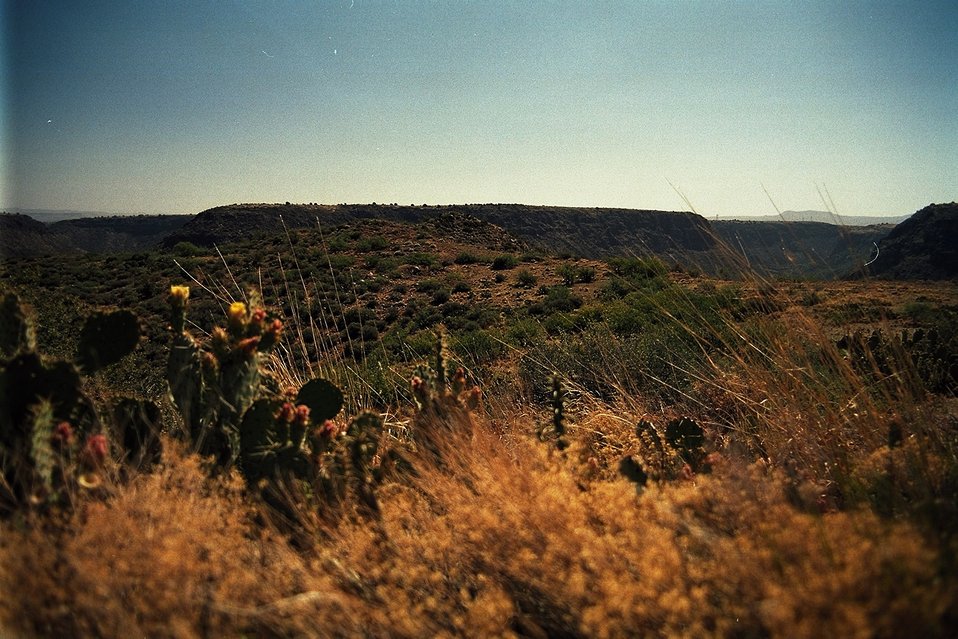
A scene with Prickly Pear cacti in the foreground and mountains in the background.